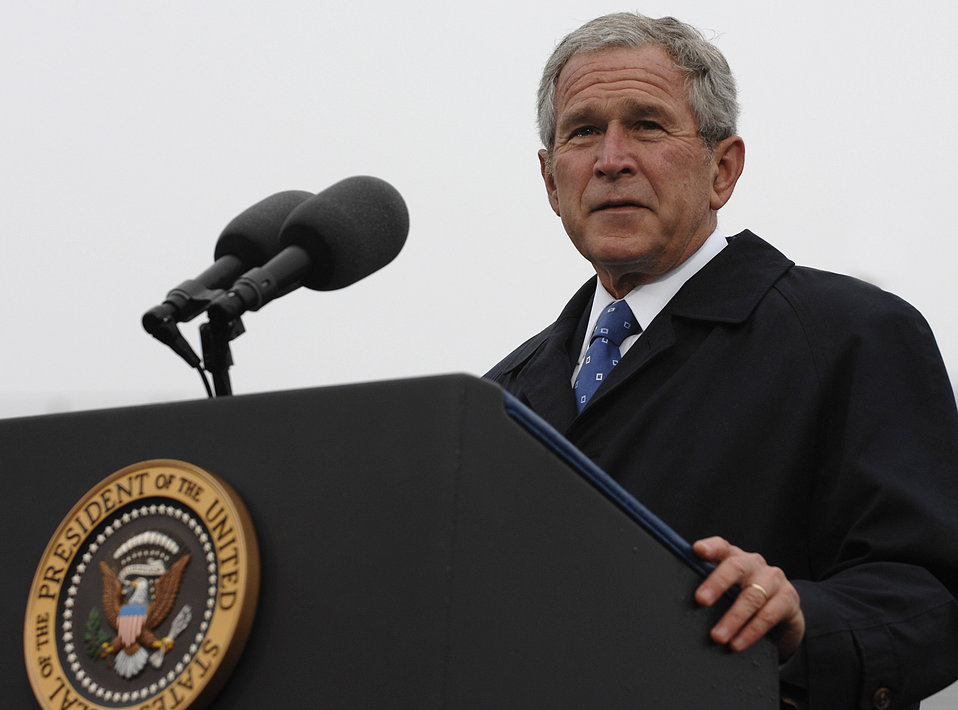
President speaks at Air Force Academy graduation

President George W. Bush addresses the cadets during U.S. Air Force Academy Class of 2008 graduation ceremony at Falcon Stadium May 28.